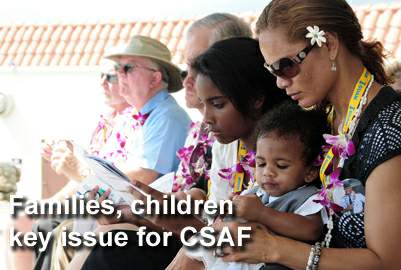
Families, children key issue for chief of staff

Support for families -- especially in the area of child education -- is a pressing issue for the military according to Air Force Chief of Staff Gen. Norton Schwartz and two other service chiefs and other service representatives here in July for a panel discussion focusing on issues related to the unique situations faced by military children and their education.